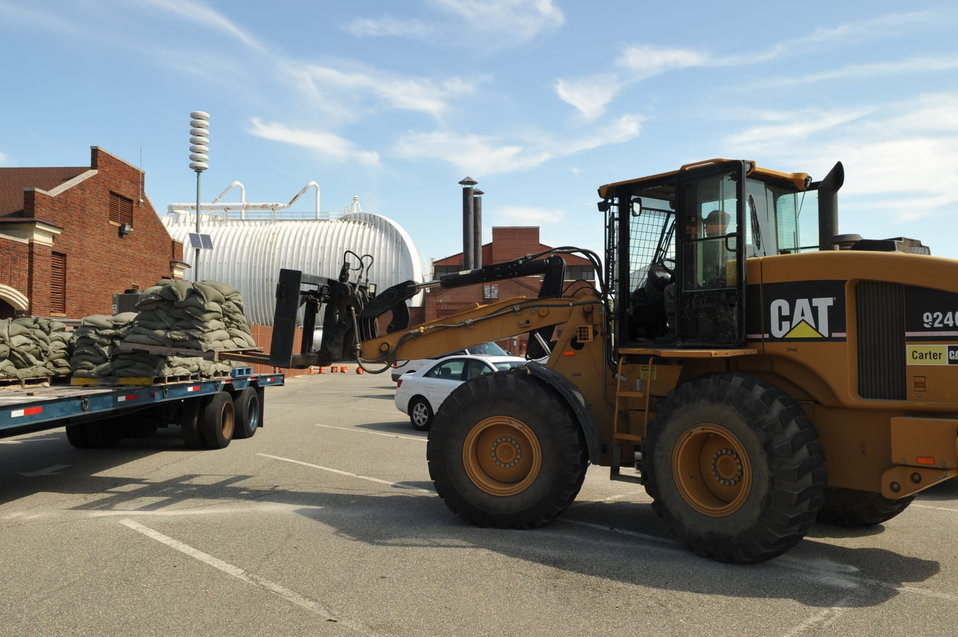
Preparing for the storm

An Airman drives a forklift carrying sandbags to various buildings at Langley Air Force Base, Va.,in an effort to prevent possible flooding from Hurricane Irene, Aug. 25, 2011. The base is preparing for the hurricane, which is expected to make landfall in the area early Sunday morning.